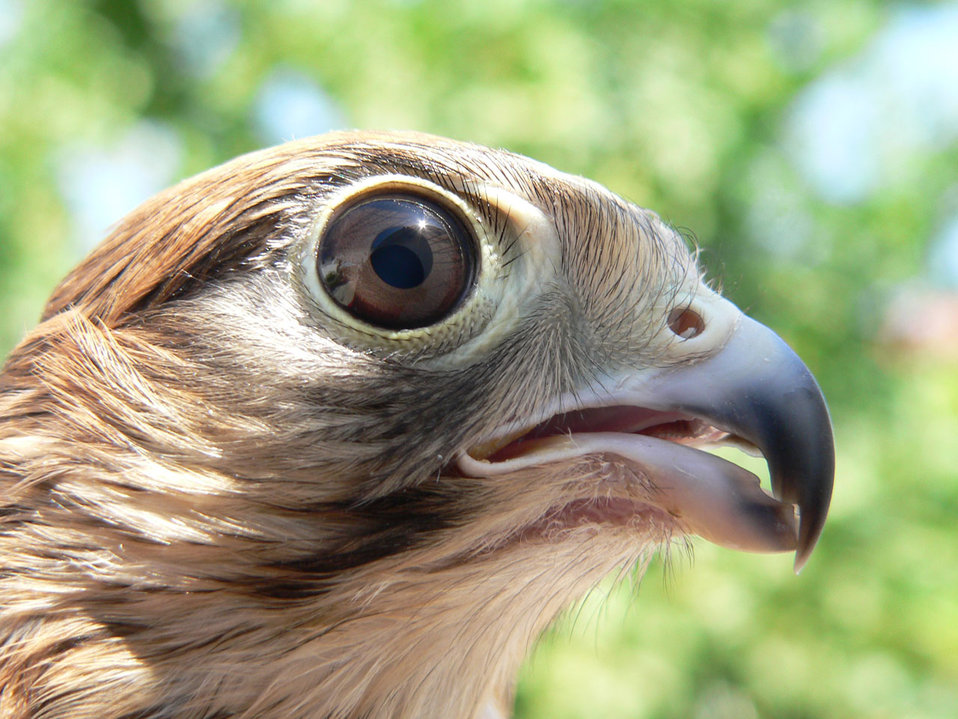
Observer

The lesser kestrel (falco naumanni).